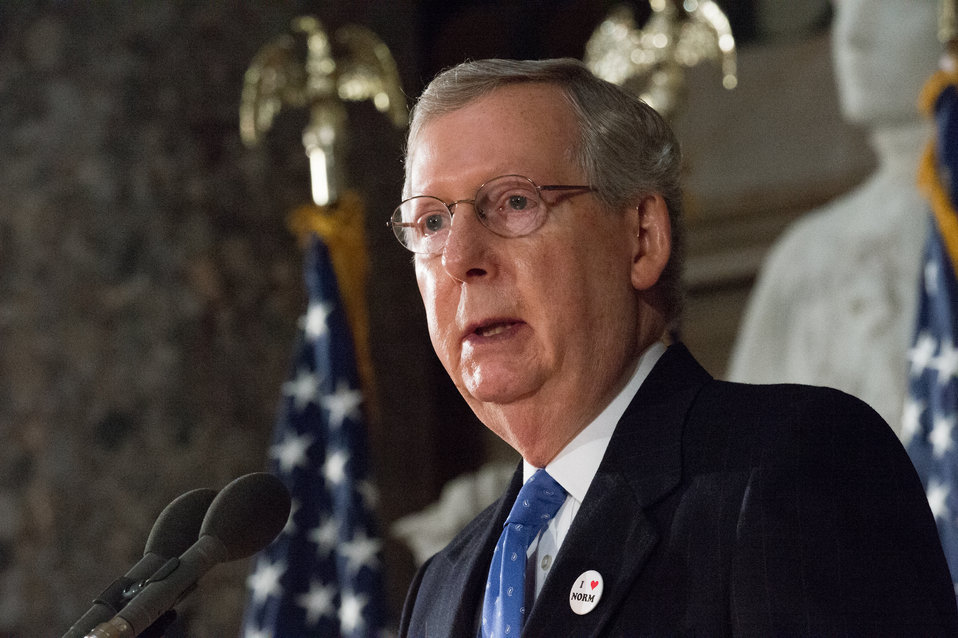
Minority Leader of the U.S. Senate Mitch McConnell, speaks at the dedication of the Dr. Norman Borlaug statue in the National Statuary Hall at the U. S. Capitol in Washington, D.C. on Tuesday, Mar. 25, 2014. Today commemorates 100 years since Dr. Borlaug’s birth. Through his scientific and humanitarian achievements, Nobel Laureate Dr. Norman E. Borlaug (1914-2009) has been credited with saving millions of people from starvation in developing countries. His collaborative work with scientists in Mexico on a high-yielding, disease resistant dwarf wheat sparked the Green Revolution of the 1960s. The National Statuary Hall Collection in the U.S. Capitol is composed of statues donated by individual states to honor persons notable in their history.